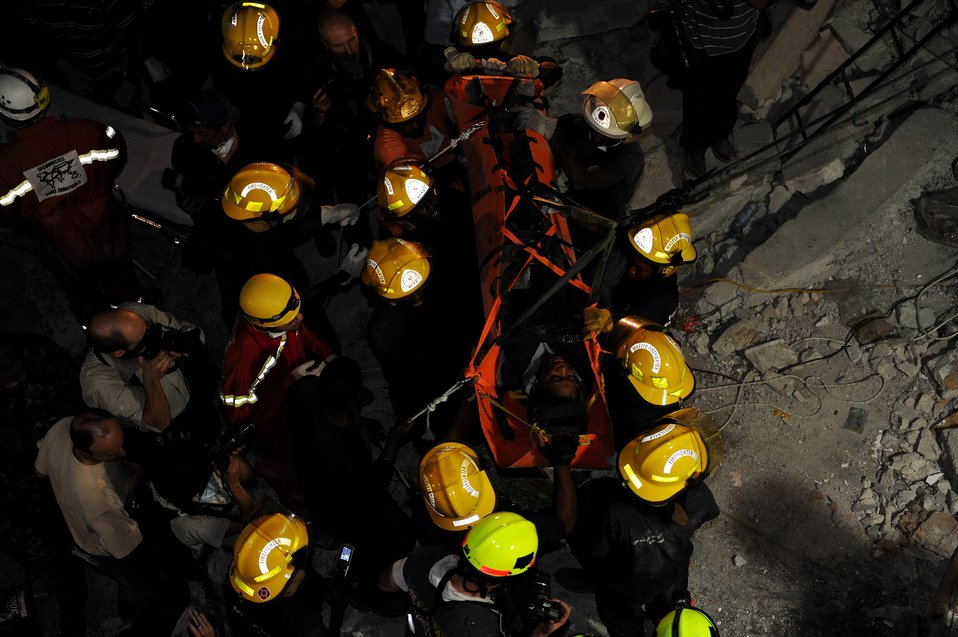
AFSOC pararescuemen work to save lives

Members of various rescue teams in Port-au-Prince, Haiti, Jan. 19, 2010, move a 25-year-old Haitian woman into an ambulance. The woman had been trapped for seven days in a space in a collapsed building. U.S. Department of Defense assets have been deployed to assist in the Haiti relief effort following a magnitude-7 earthquake that hit Port-au-Prince Jan. 12, 2010.